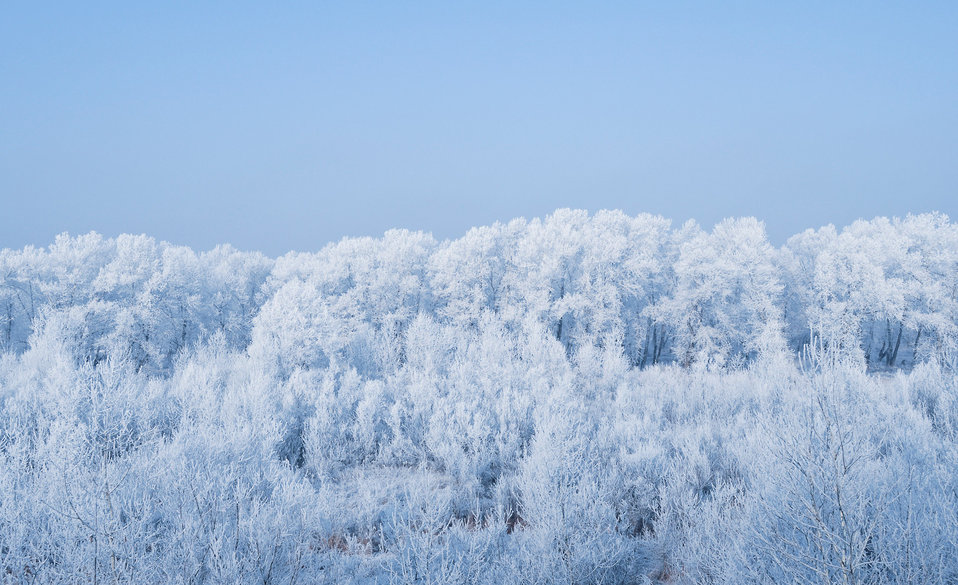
Snowy landscape

Frost on the trees, winter landscape.